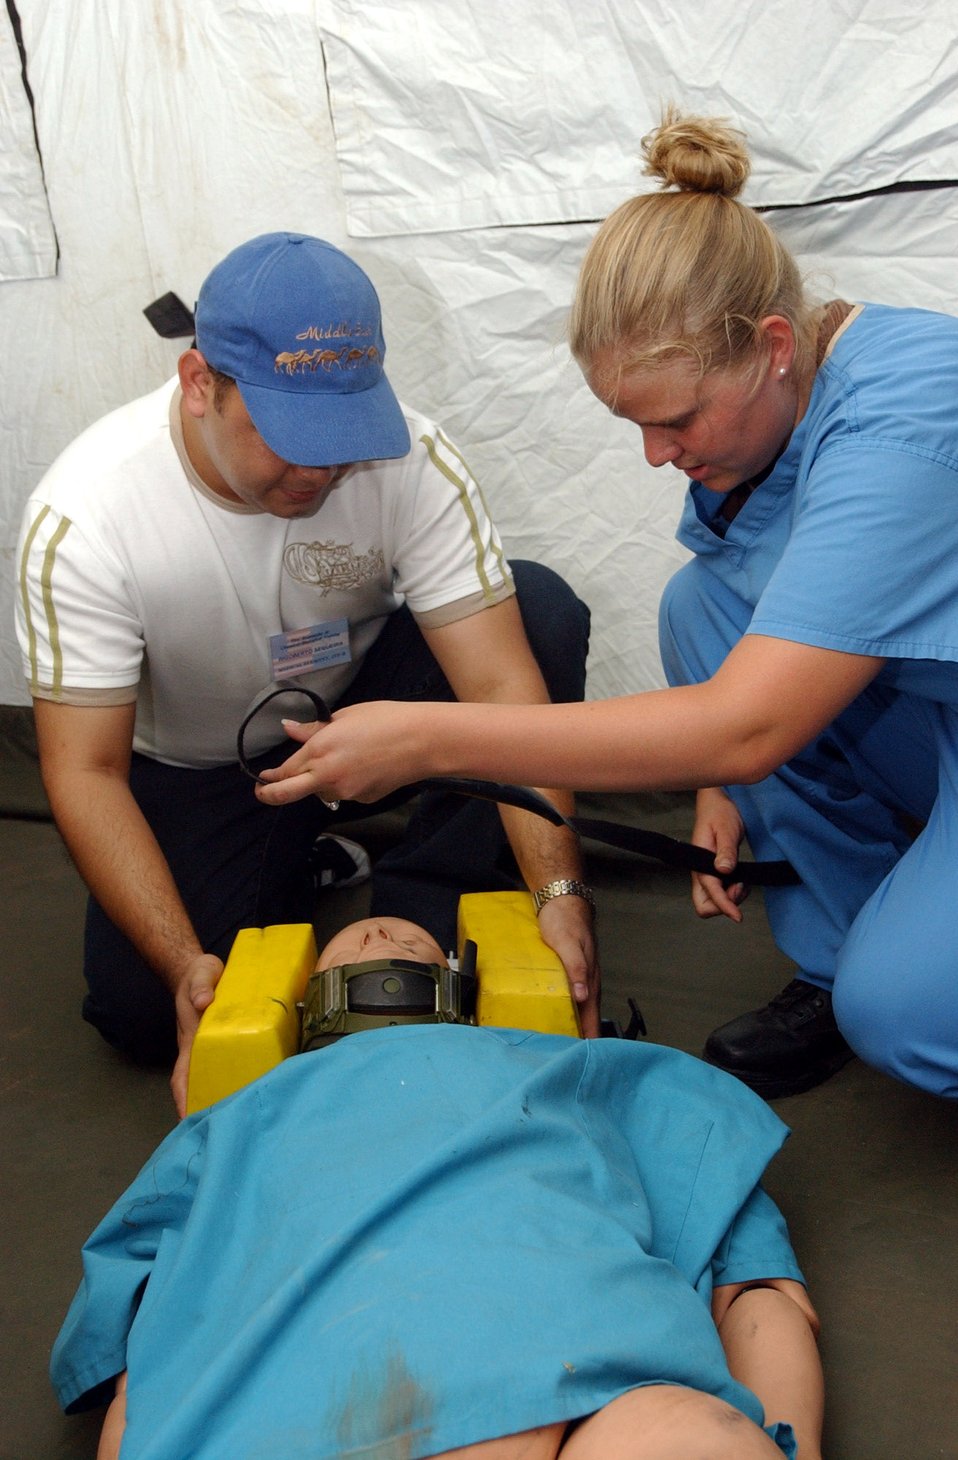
MEDEL offers readiness training to embassy, medical personnel

Senior Airman Jessica Laws explains how to stabilize a patient with a possible neck or spinal cord injury, during a major accident response exercise at Soto Cano Air Base, Honduras. Thirty eight students attended the class, which provided training on first aid techniques and chemical, biological, radiological, nuclear, and explosive readiness training. Airman Laws is with the Joint Task Force-Bravo's Medical Element.